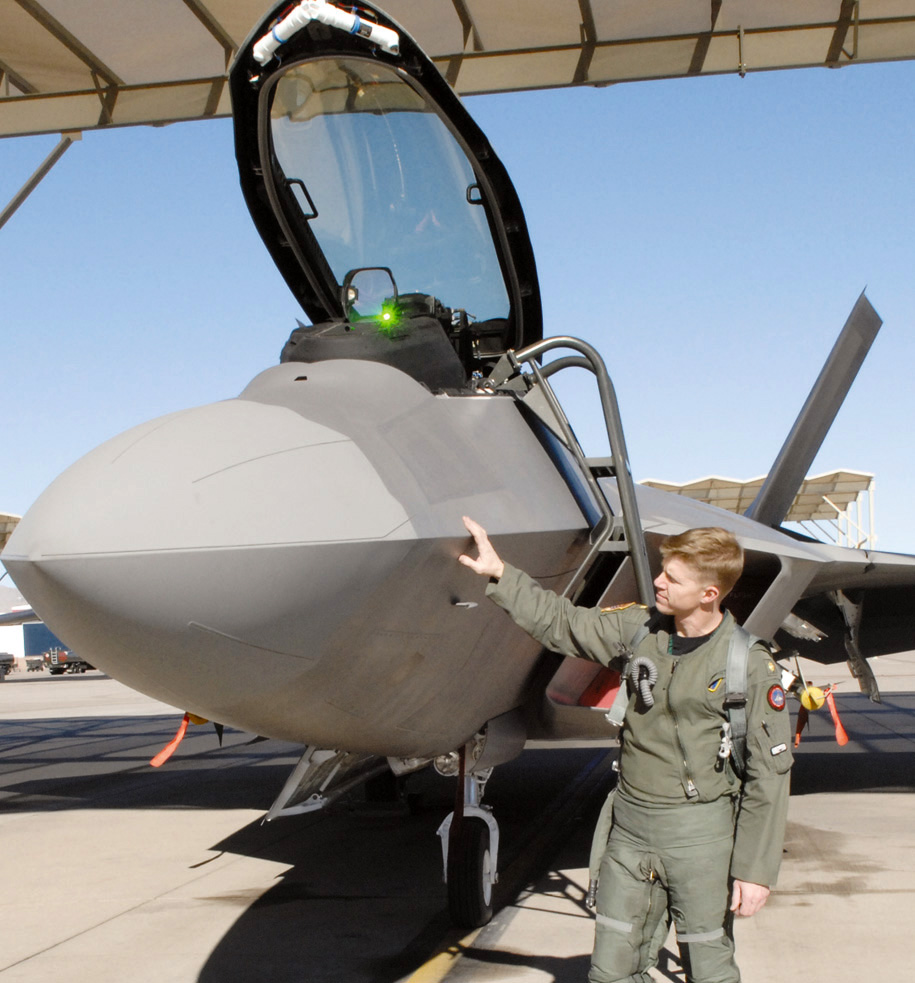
Navy pilot flies for Air Force

Lt. Cmdr. Michael Wosje, 59th Test and Evaluation Squadron, conducts a pre-flight inspection on an F-22 Raptor. He is the only Navy pilot flying the Raptor for the Air Force.